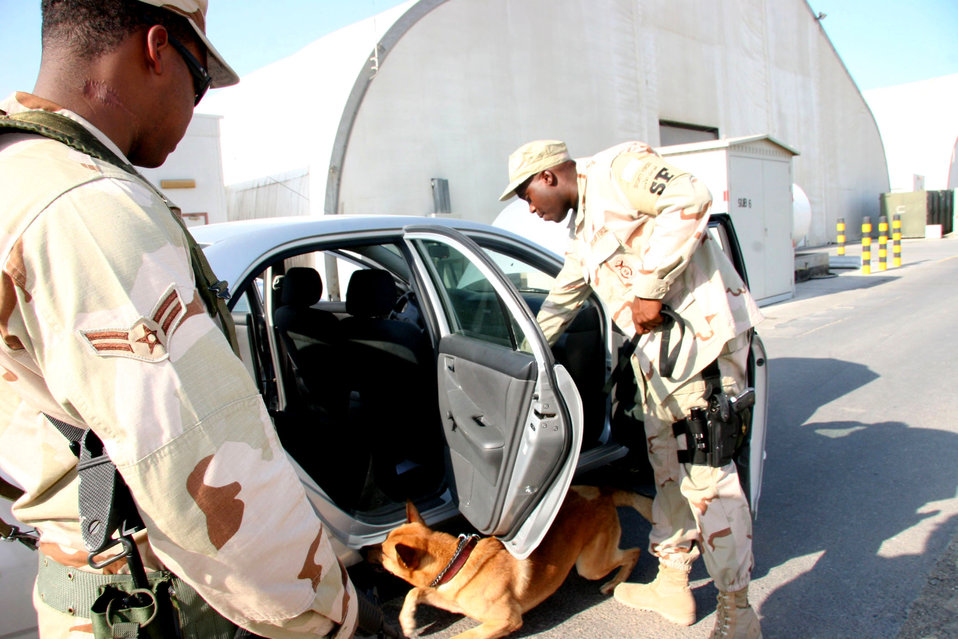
Brothers spent first deployment together

Staff Sgt. Malik Calhoun, 380th Expeditionary Security Forces Squadron K-9 handler, and Arco, his patrol and explosive detection dog, conduct a vehicle sweep while his brother Airman 1st Class Dandre Bufford provides overwatch during an explosive detection training scenario Nov. 27.